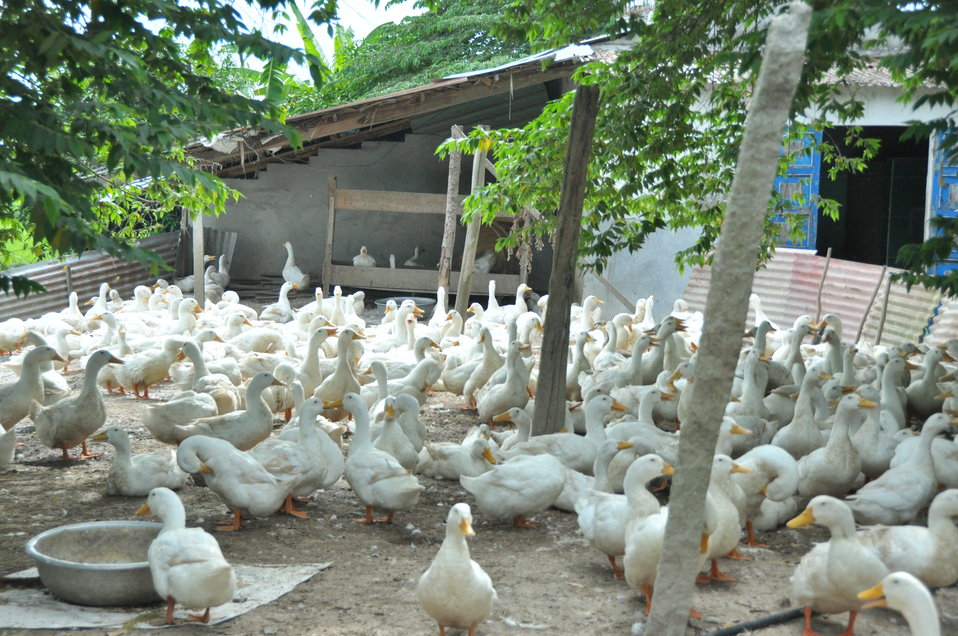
Duck farm in Can Tho

USAID Vietnam